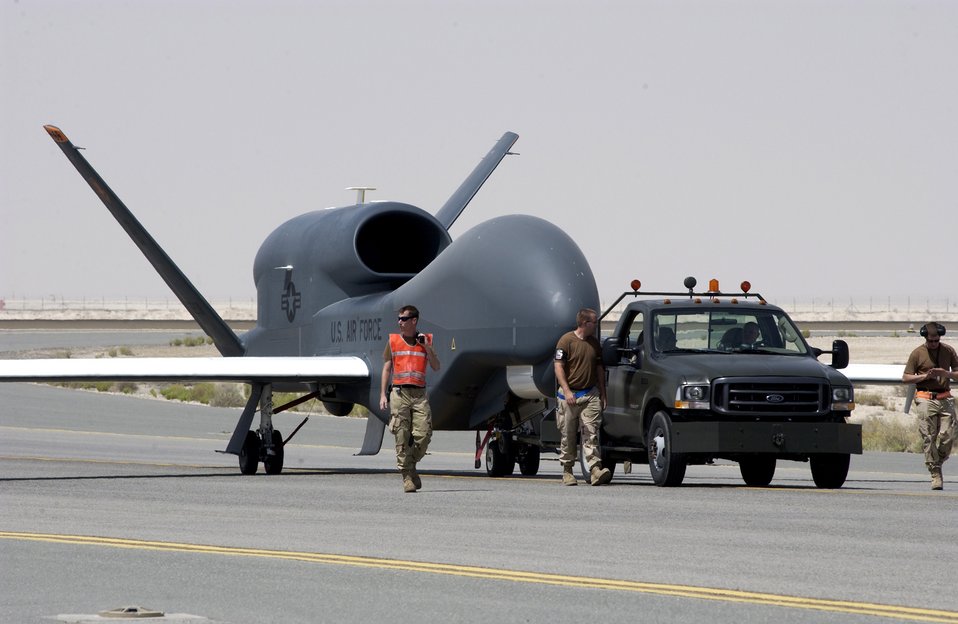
Global Hawk operations reach new high

The Global Hawk has proven its worth in recent operations, surveying large geographic areas with pinpoint accuracy and giving military commanders near real-time information.